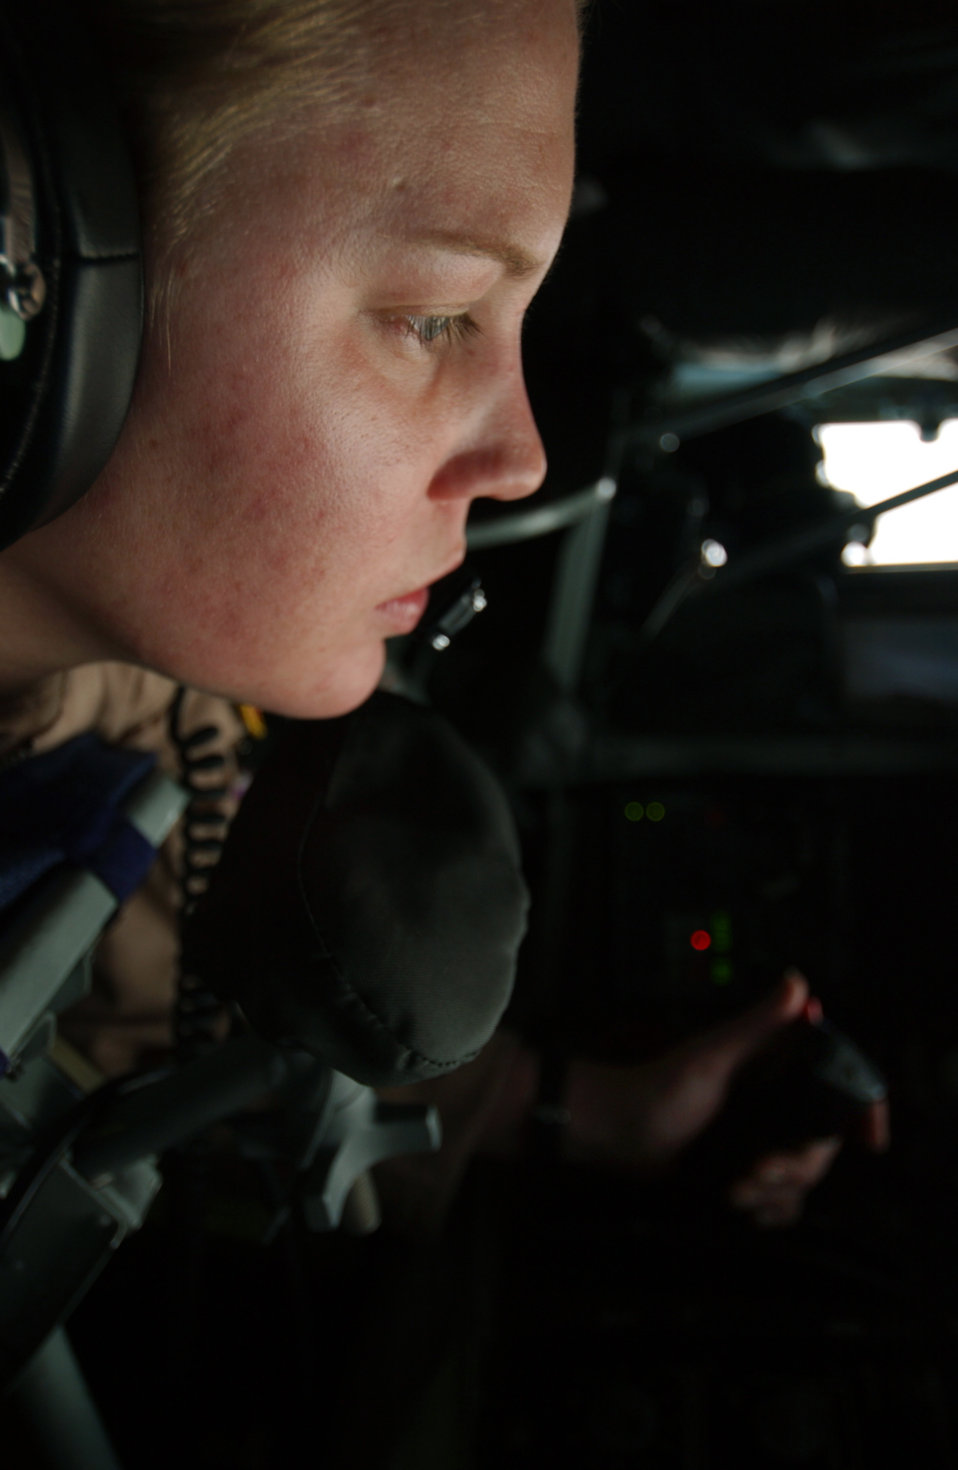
One billion pounds of fuel

SOUTHWEST ASIA -- Senior Airman Casey Killian refuels an F-16 Fighting Falcon supporting Operation Iraqi Freedom on April 21. Airman Killian pumped the 1 billionth pound of fuel passed by Combined Forces Air Component Command aircraft since Jan. 30, 2003. She is a boom operator with the 340th Expeditionary Air Refueling Squadron.